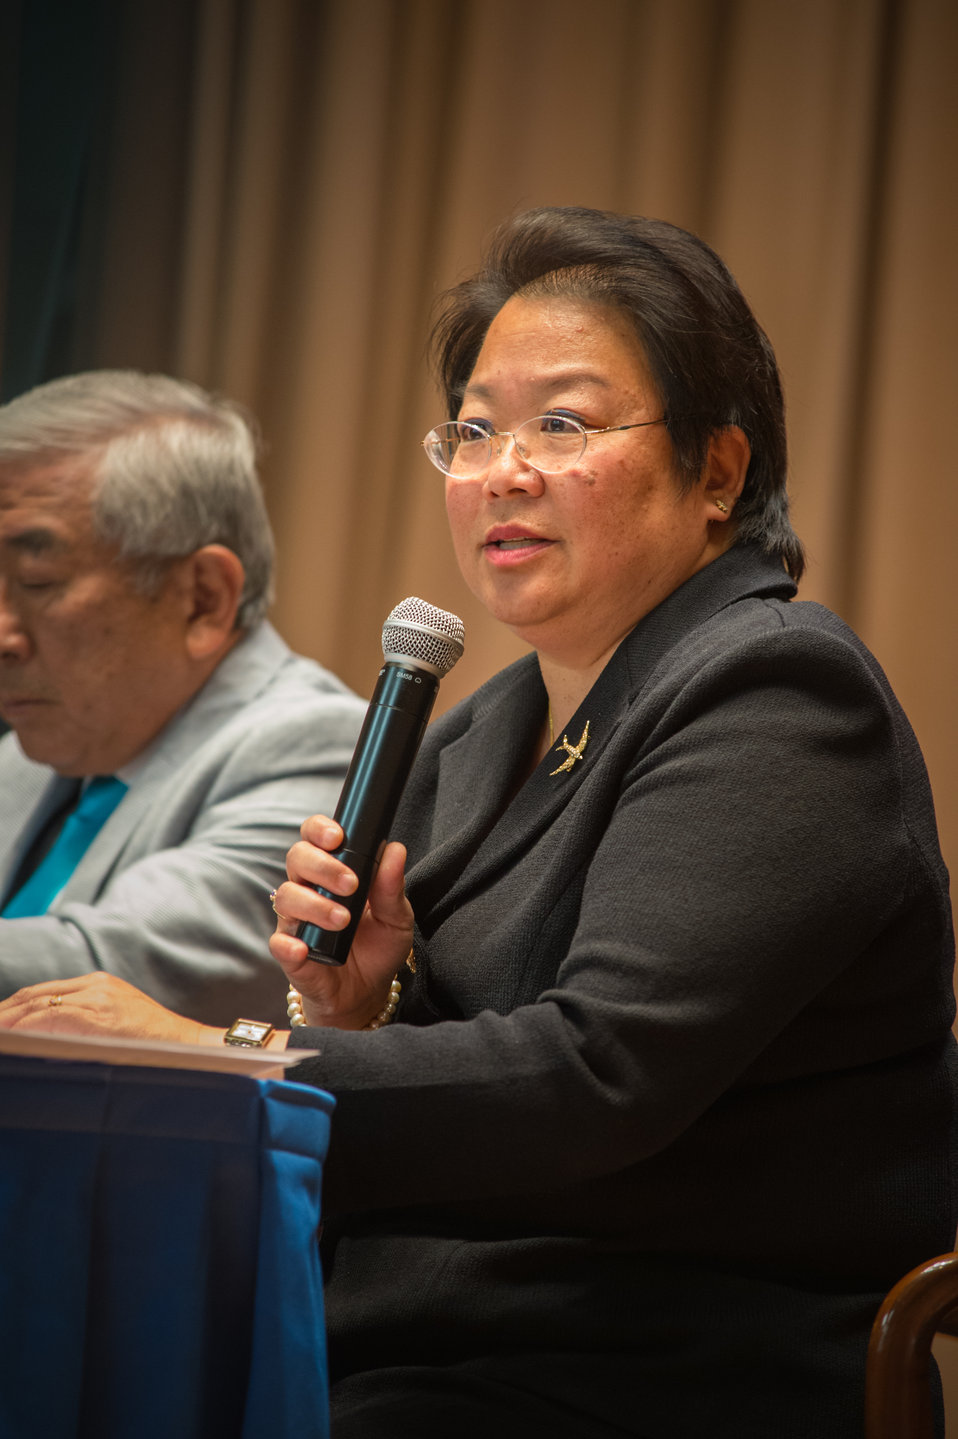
Daphne Kwok, Commissioner and Former Chair, President’s Advisory Commission on Asian American and Pacific Islanders participates in a panel discussion on civil rights and leadership U.S. Department of Agriculture (USDA) in Washington, D.C. on Thursday, May 22, 2014. The theme of the event was, “Diverse Leadership and Expanding Opportunity: Am Imperative for America.”